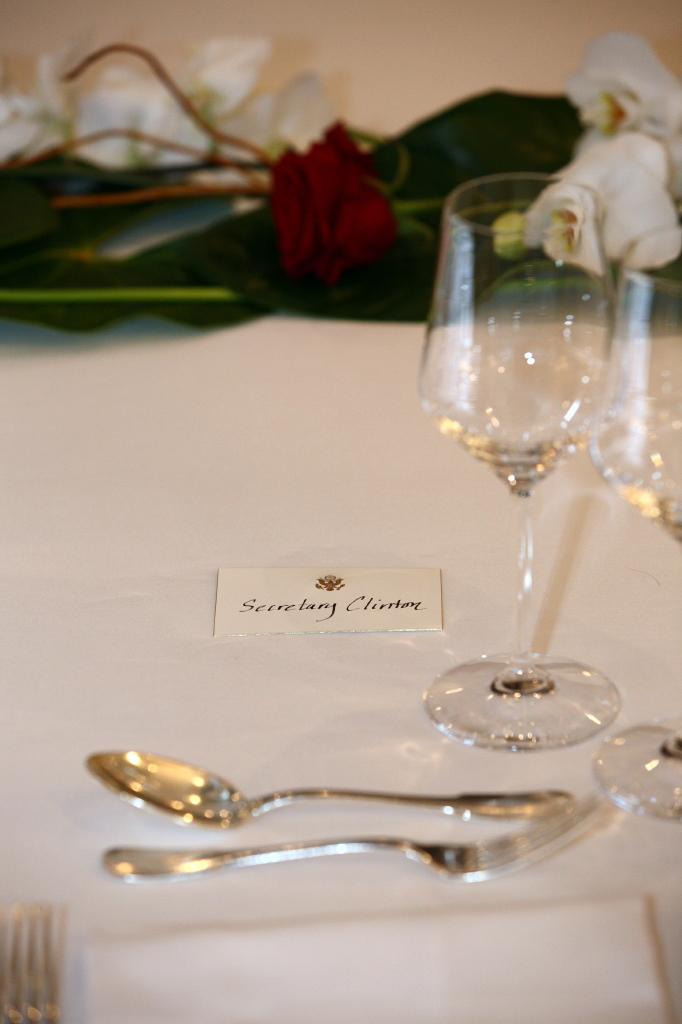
Secretary Clinton Placard in Geneva, Switzerland

Dinner name placard for U.S. Secretary of State Hillary Rodham Clinton in Geneva, Switzerland March 6, 2009.